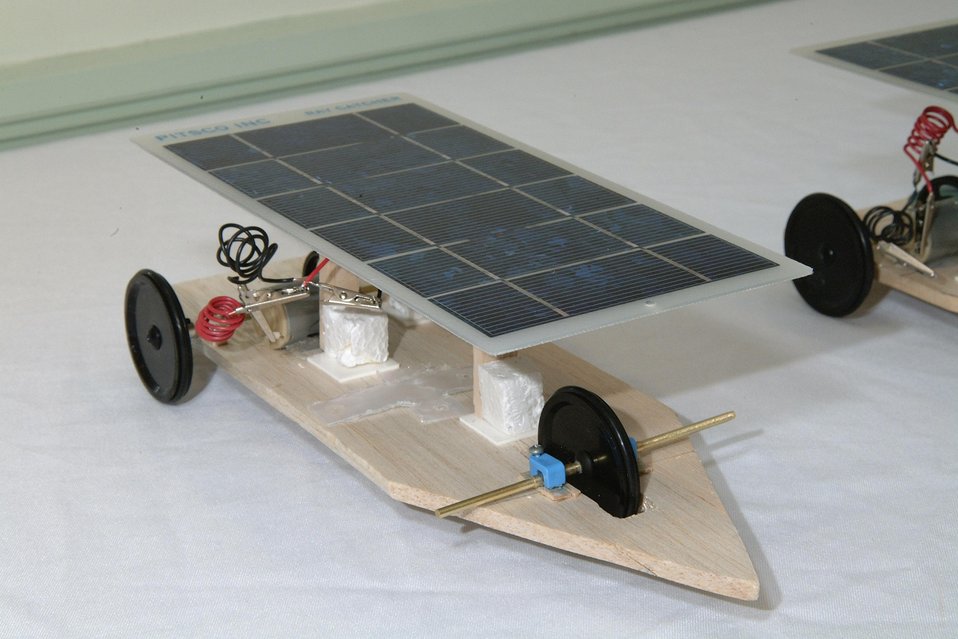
MODEL ENTERED INTO THE SOLAR CAR RACE, PART OF DOE'S NATIONAL MIDDLE SCHOOL SCIENCE BOWL.

THE DEPARTMENT OF ENERGY SPONSORED THE FIRST NATIONAL MIDDLE SCHOOL SCIENCE BOWL ON MARCH 21-24, 2002 IN WASHINGTON, DC AT DOE HEADQUARTERS FORRESTAL BUILDING. ON MARCH 23RD THE COMPETITION INCLUDED A MODEL SOLAR CAR RACE HELD AT THE NATIONAL 4-H CONFERENCE CENTER, CHEVY CHASE, MD. THE MODEL CARS WERE DESIGNED AND CONSTRUCTED BY THE TEAM MEMBERS.